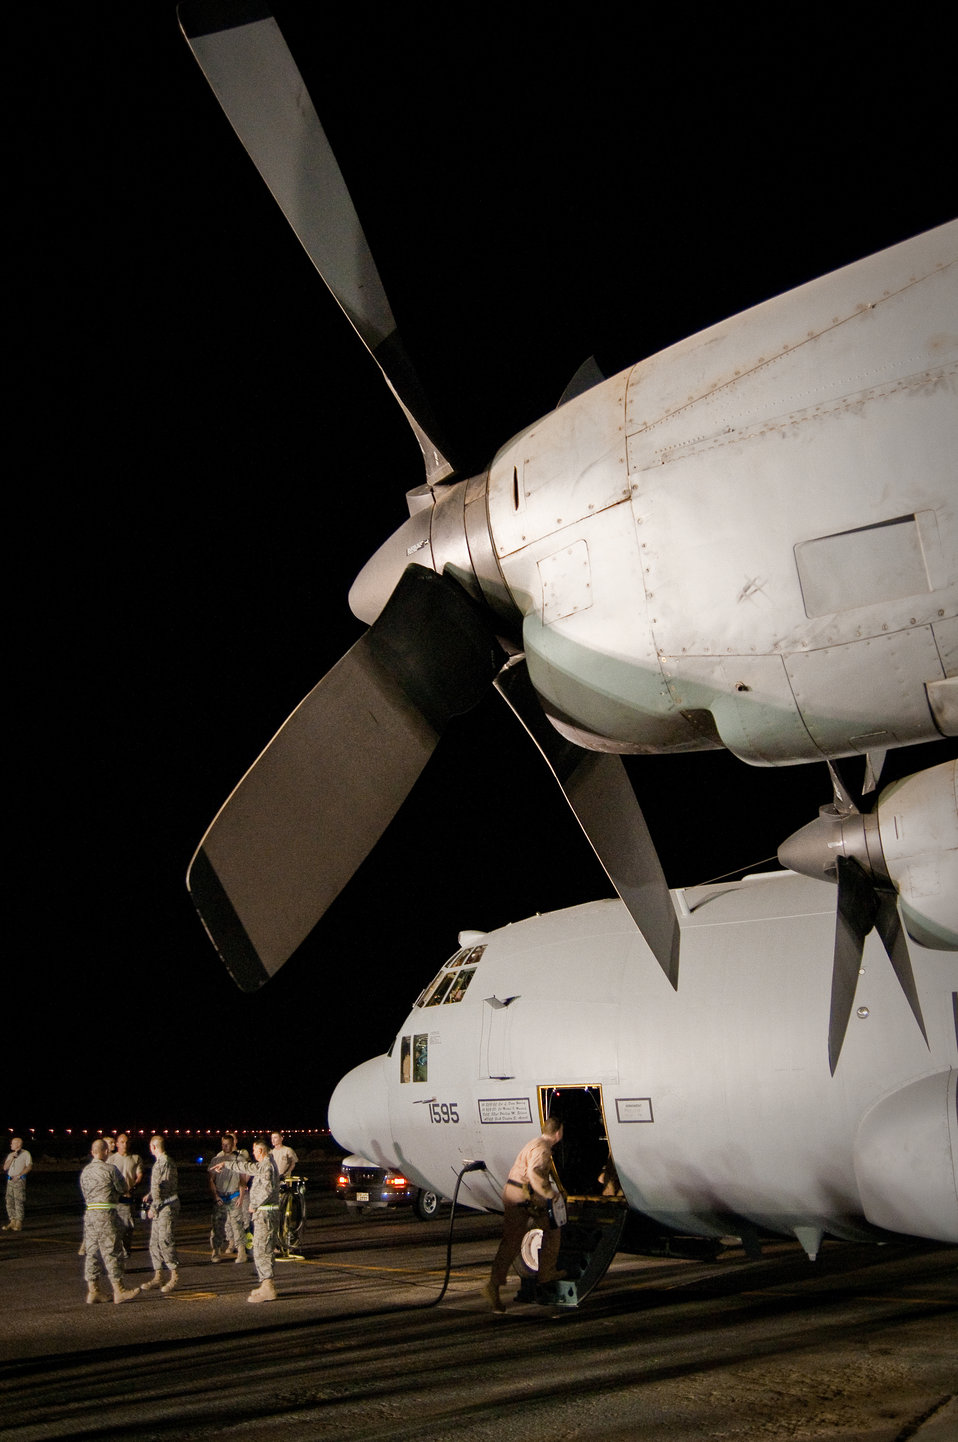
EC-130H Compass Call

Maintenance troops and aircrew members prepare anEC-130H for its final departure Aug. 29, 2010, in Southwest Asia. The plane's unit, the 43rd Expeditionary Electronic Combat Squadron, has been part of the 386th Air Expeditionary Wing for 6.5 years and is moving to another base in the U.S. Central Command area of responsibility because of the responsible drawdown of forces in Iraq. The EC-130H provides U.S. forces with the ability to jam enemy communications.